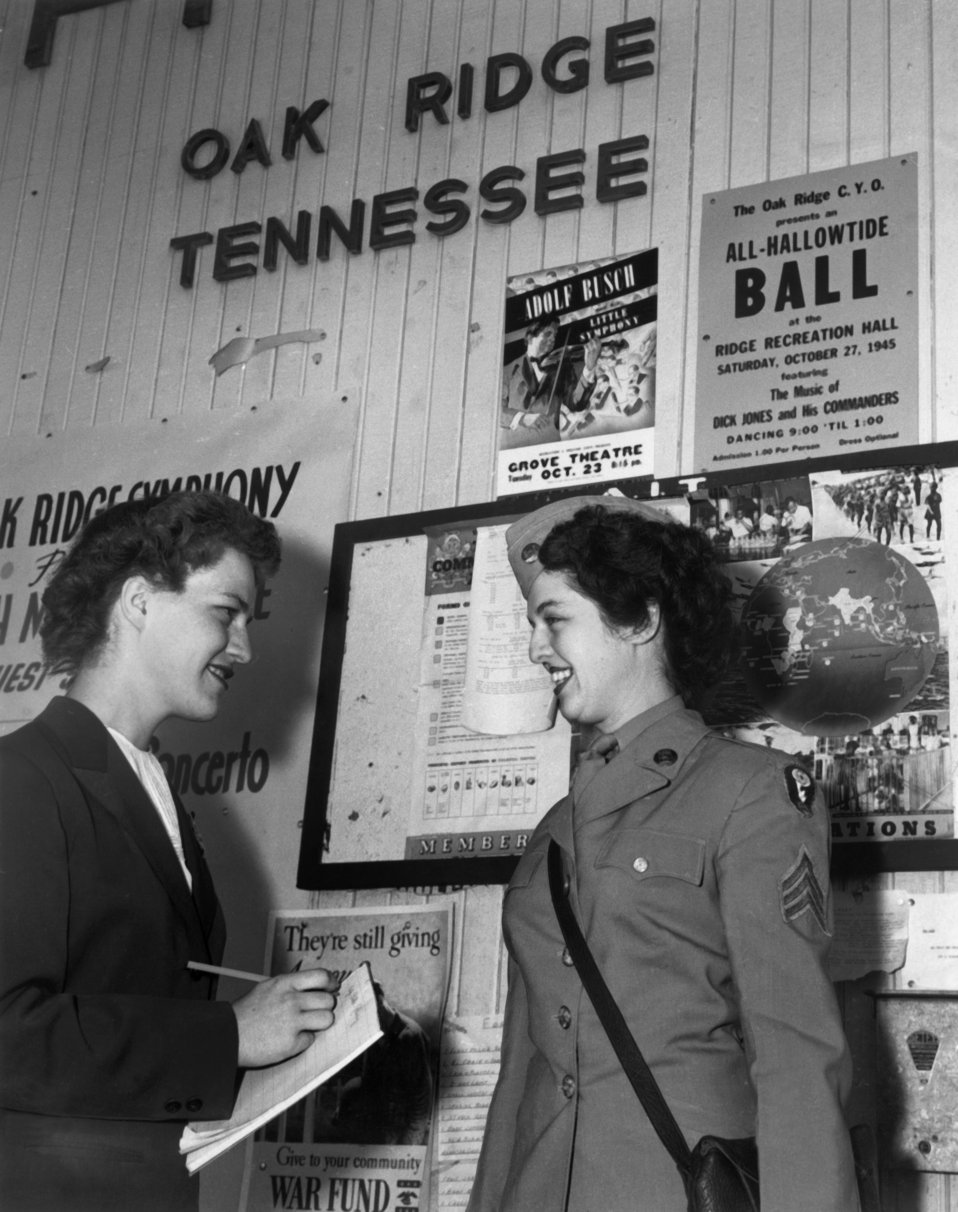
Lucia Carter Interviewing WAC Ruth Clancy Oak Ridge

1151 DOE photo by Ed Westcott

Lucia Carter Interviewing WAC Ruth Clancy Oak Ridge Tennessee10-12-1945